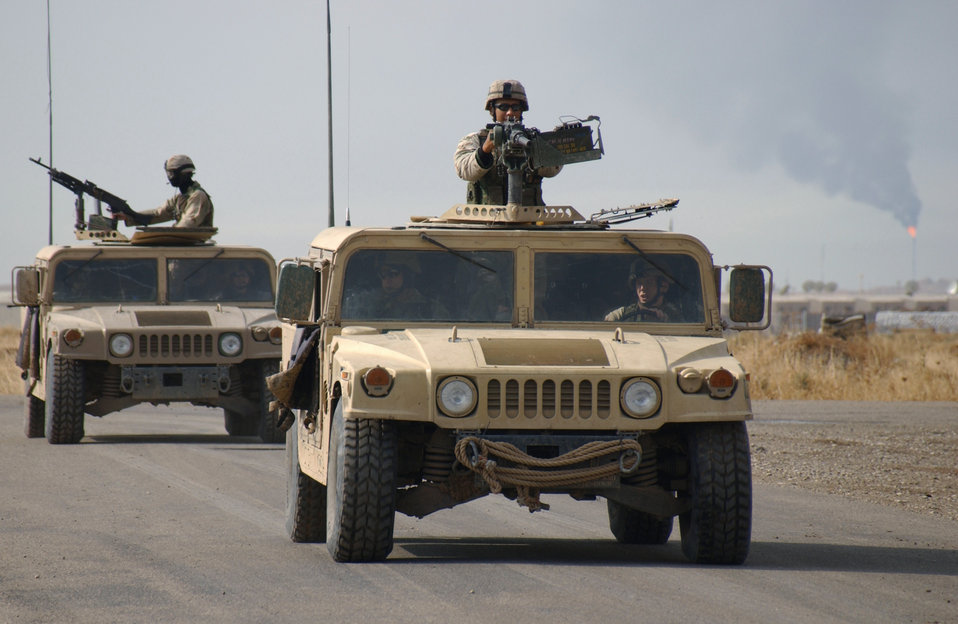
Iraqi Freedom deployments help Airmen understand war

KARSHI-KHANABAD AIR BASE, Uzbekistan -- Security forces ride in Humvees to conduct mounted and dismounted foot patrols through local villages.